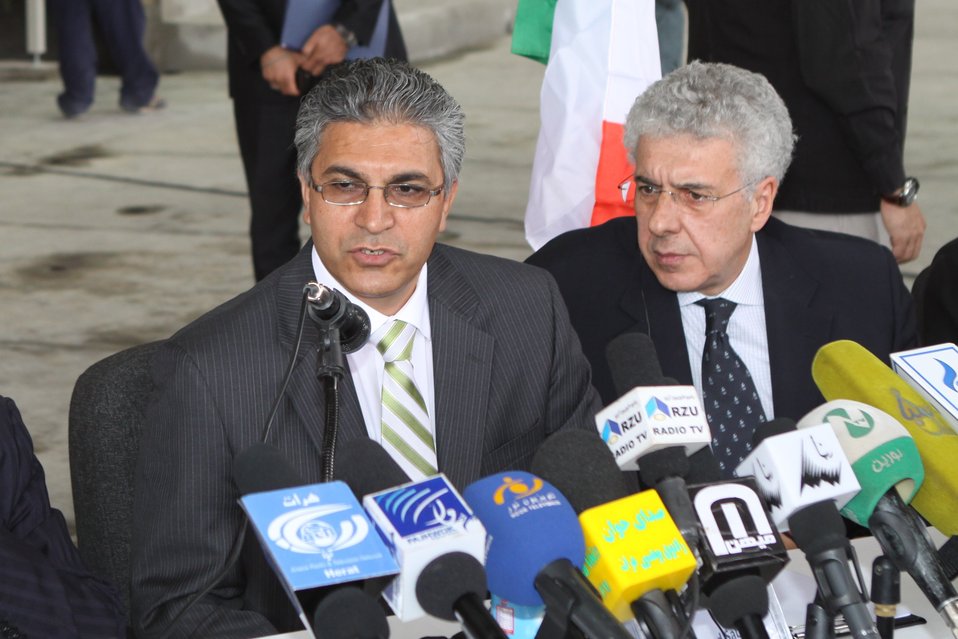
100525 Hirat Marble Conference 336